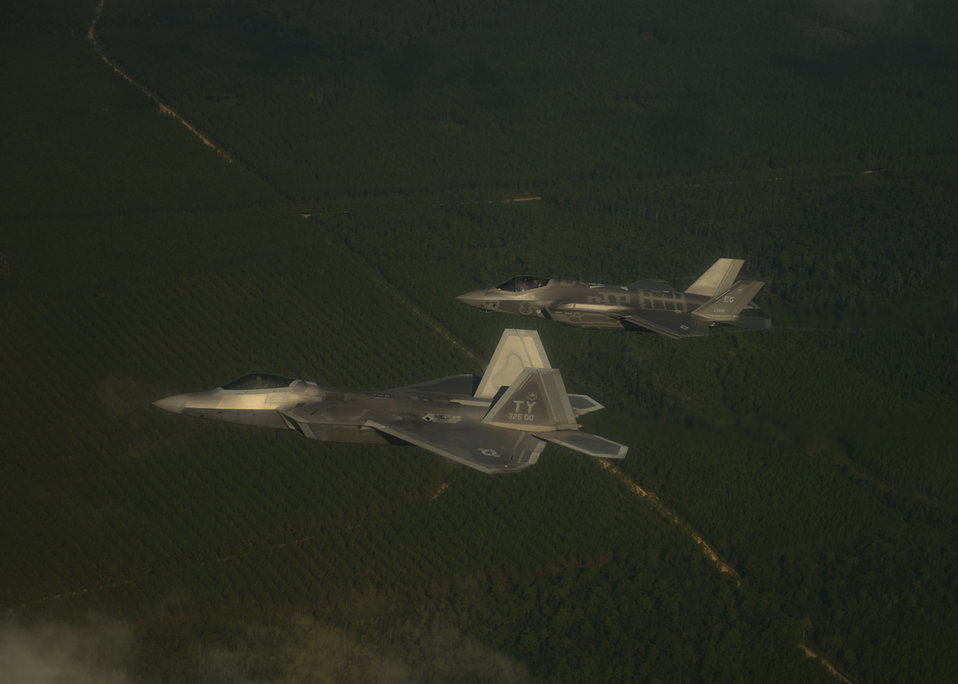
Fifth-generation formation

An F-22A Raptor, foreground, from the 43rd Fighter Squadron at Tyndall Air Force Base, Fla., and an F-35A Lightning II joint strike fighter from the 33rd Fighter Wing at Eglin Air Force Base, Fla., soar over the Emerald Coast Sept. 19, 2012. This was the first time the two fifth-generation fighters have flown together for the Air Force.